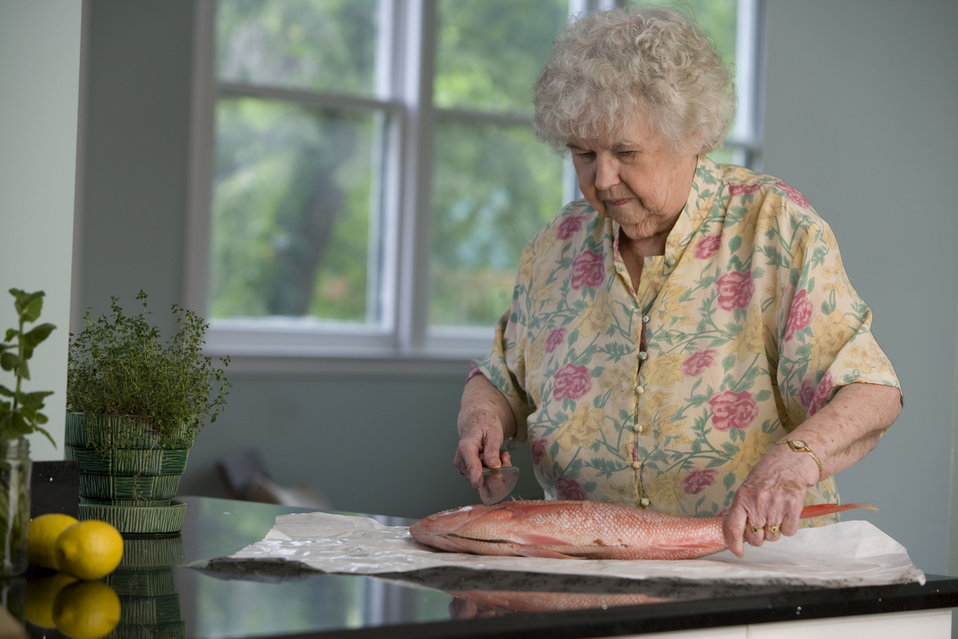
Here, an elderly woman was in the process of preparing a fresh fish on her clean kitchen counter. Having scaled and gutted the fish, while carefully using a large knife, the woman was about to remove its head.